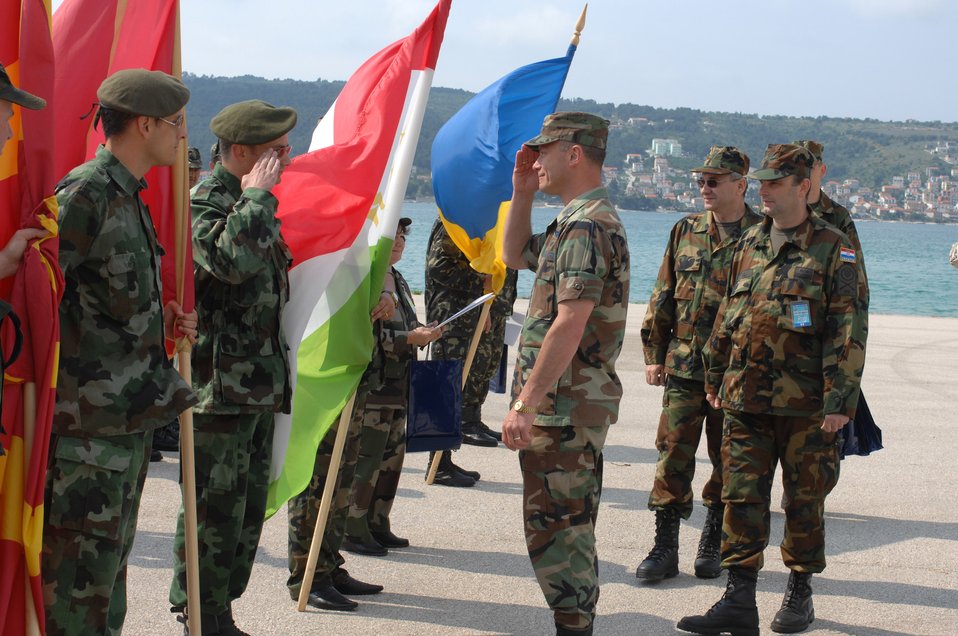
Multinational exercise in Croatia wraps up

Col. Kevin Ross gives a final salute May 14 to the Albanian delegation chief as Croatian army Lt. Col. Davorko Jokic looks on during the closing ceremony of the 2008 Medical Training Exercise in Central and Eastern Europe, or MEDCEUR, at the Divulje Training Base in Croatia. Colonel Ross is the MEDCEUR commander. Colonel Jokic is the MEDCEUR co-commander.